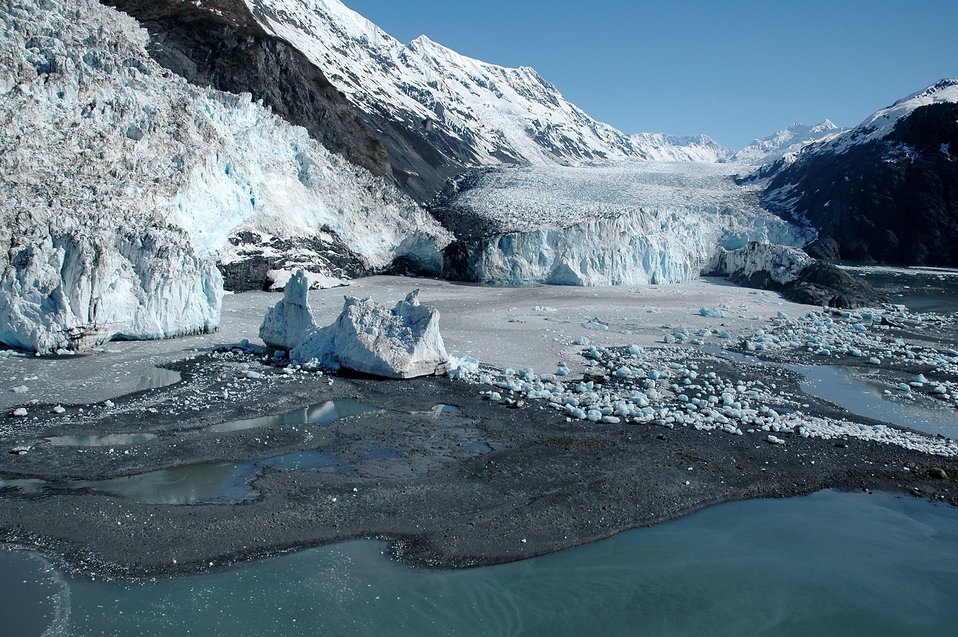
Aerial photograph. Glaciers terminating inshore of the shoreline of College Fjord.